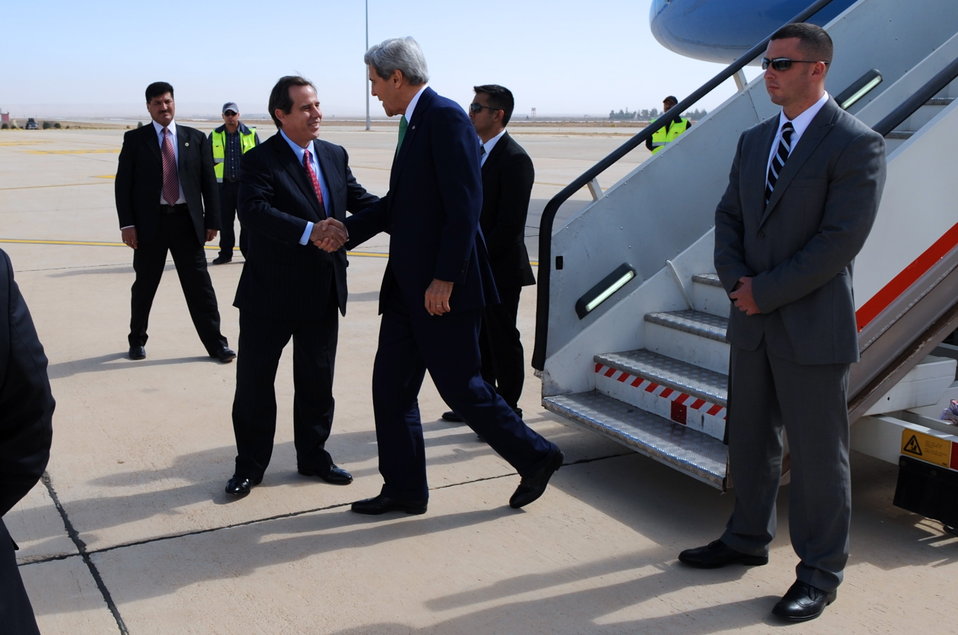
Secretary Kerry Arrives in Amman for Talks on Middle East Issues

U.S. Ambassador to Jordan Stuart Jones greets U.S. Secretary of State John Kerry upon his arrival in Amman, Jordan, on November 7, 2013, for talks focused on Middle East issues.